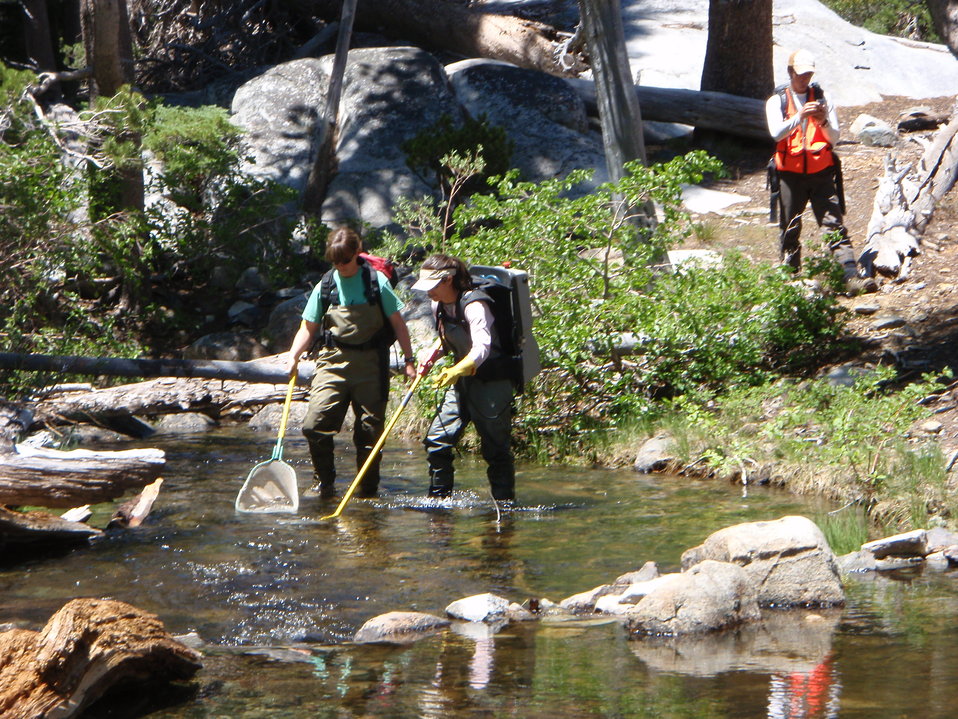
BIG Goldfish1

U.S. Forest Service crews survey fish species in Lake Tahoe Basin streams in California. Data shows that invasive species now outnumber native fish.